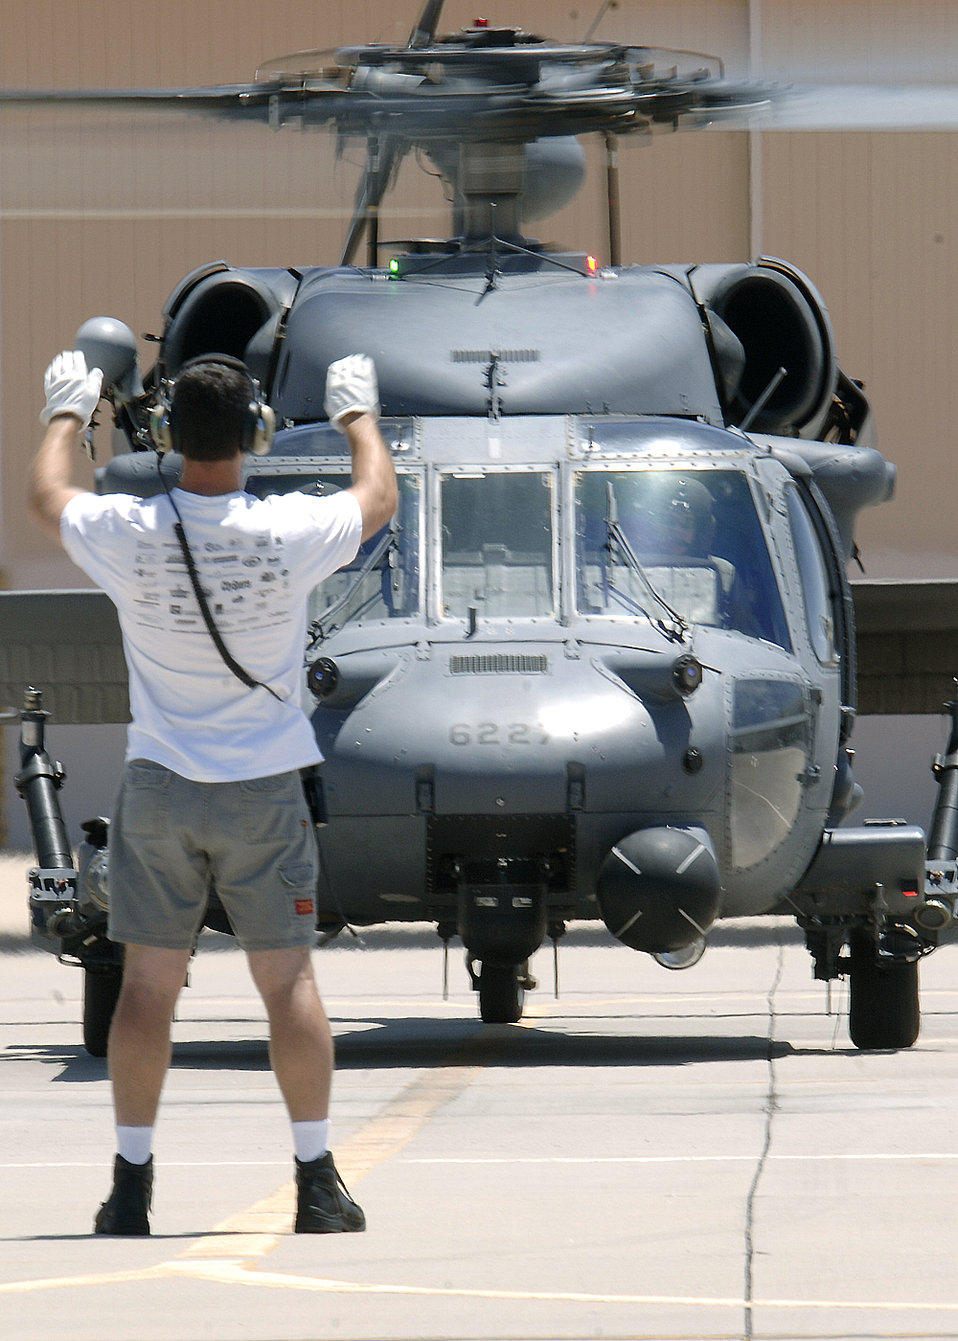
Pave Hawk testing

Tech. Sgt. Gregory Gaunt marshals an HH-60 Pave Hawk with Maj. John Keeler at the controls at Davis-Monthan Air Force Base, Ariz., on July 10. Major Keeler and Sergeant Guant were two of the Airmen who participated in a real-world rescue of an individual from a cargo ship off the coast of California on July 1. They are assigned to the Air Force Reserve Command's 943rd Rescue Squadron.